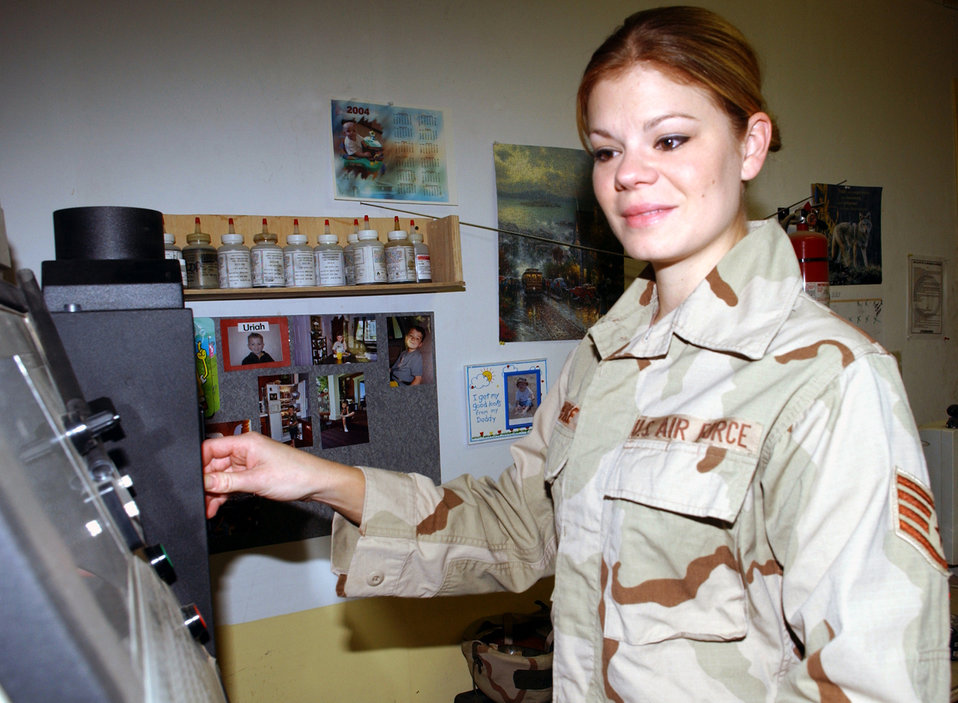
Special team searches for aircraft cracks

BAGRAM AIR BASE, Afghanistan -- Staff Sgt. Brooke Wilke reviews results from an oil sample analysis. She is a nondestructive inspection technician assigned to the 354th Expeditionary Aircraft Maintenance Squadron. Technicians test oil samples from each aircraft engine daily to help determine its mechanical condition.